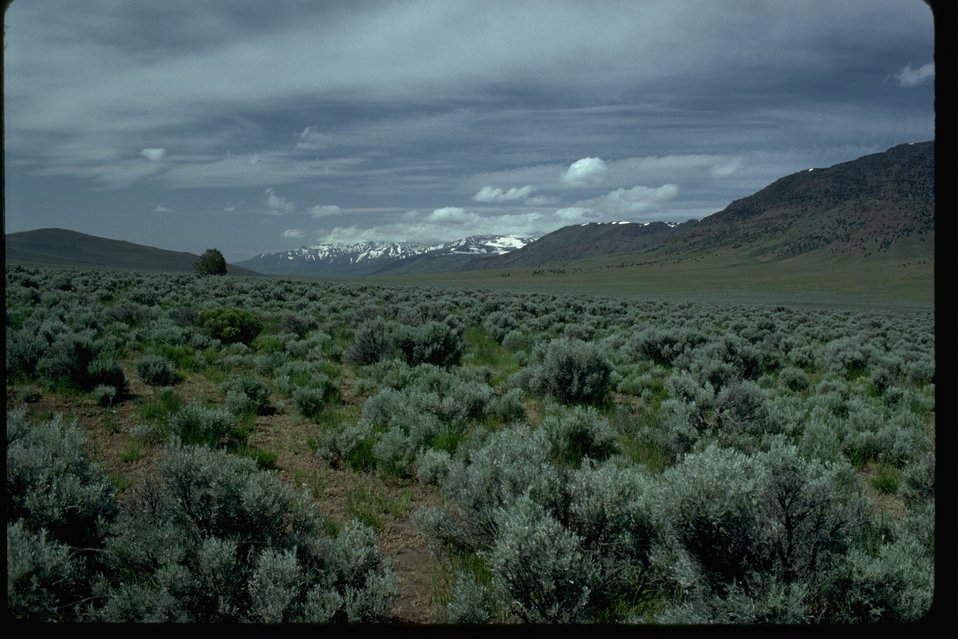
Sagebrush in the Stone House area on the east side of Steens Mountain.